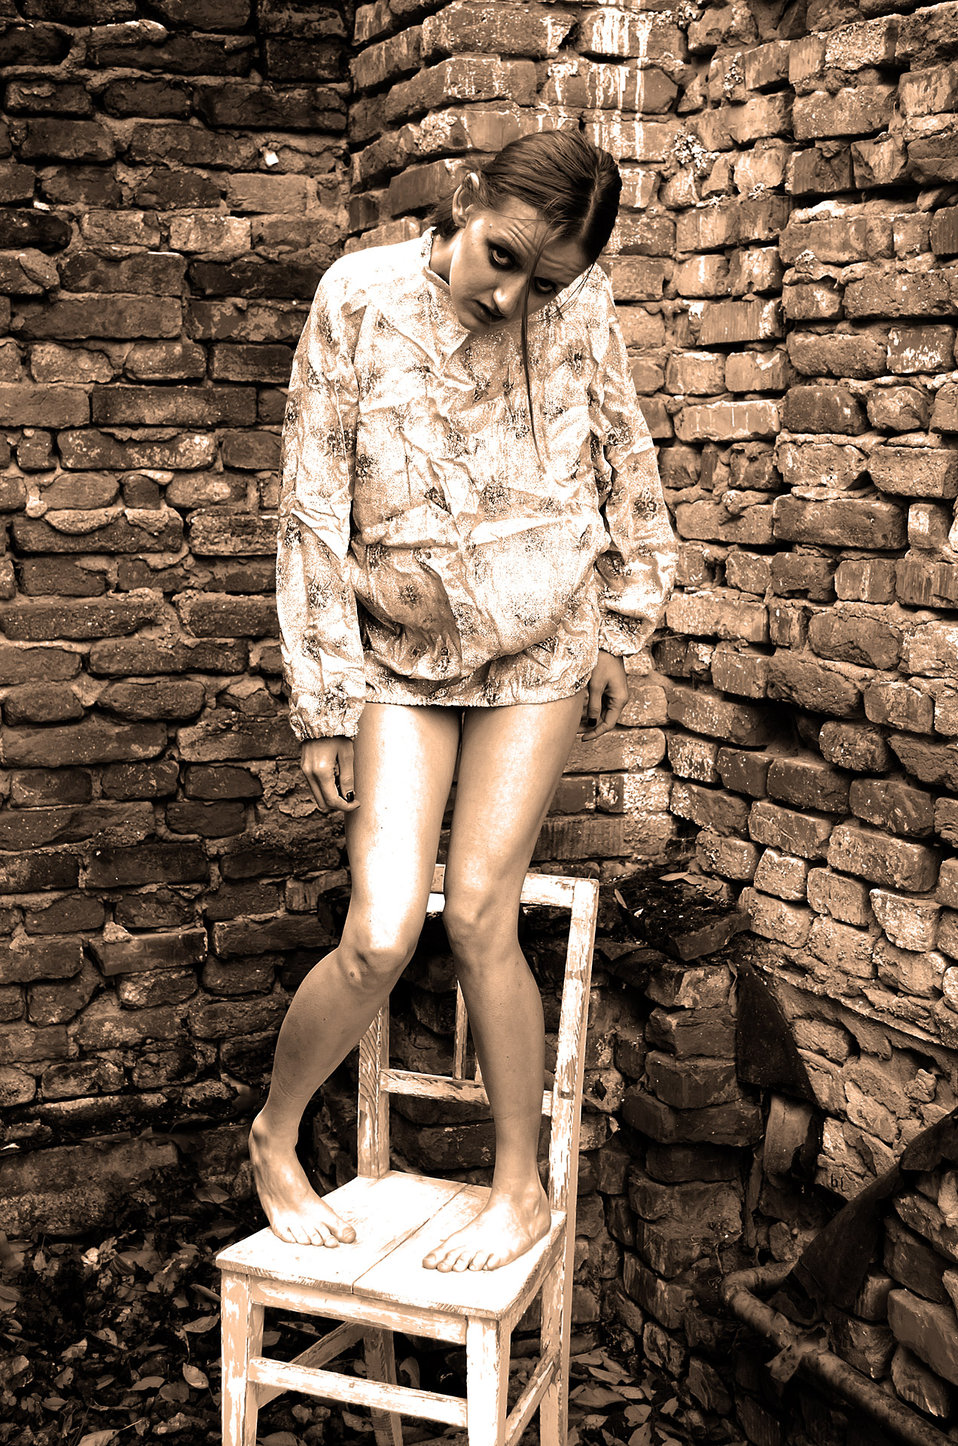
Scary lady - symbol.